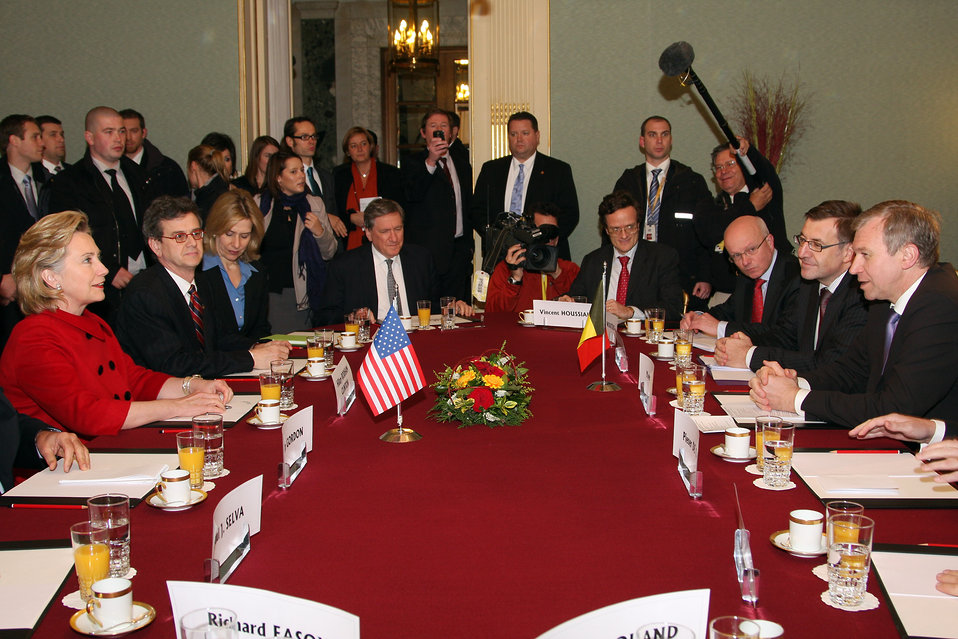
Secretary Clinton Meets With Belgian Officials

U.S. Secretary of State Hillary Rodham Clinton meets with Belgian officials at Val Duchesse in Brussels, Belgium December 4, 2009. [U.S. Embassy Brussels by Freddy Moris / Public Domain]